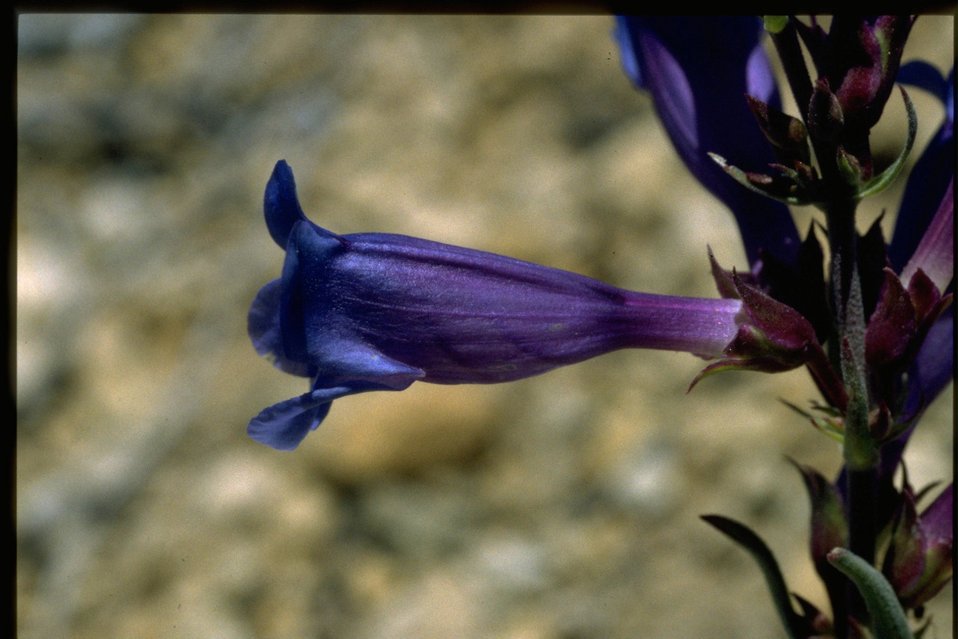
Close up shot of penstemon wildflower.